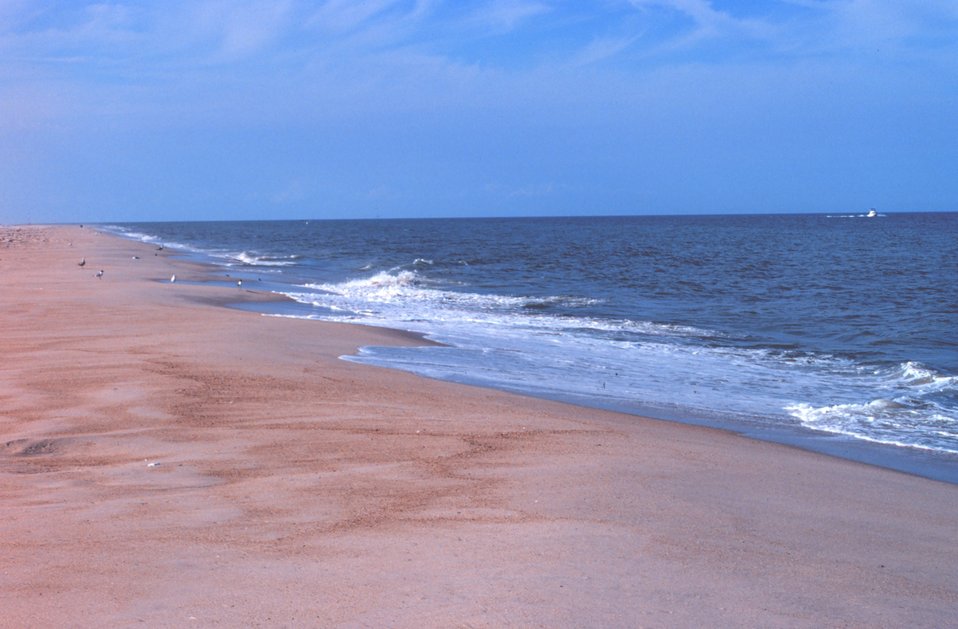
Looking north at Delaware Seashore State Park